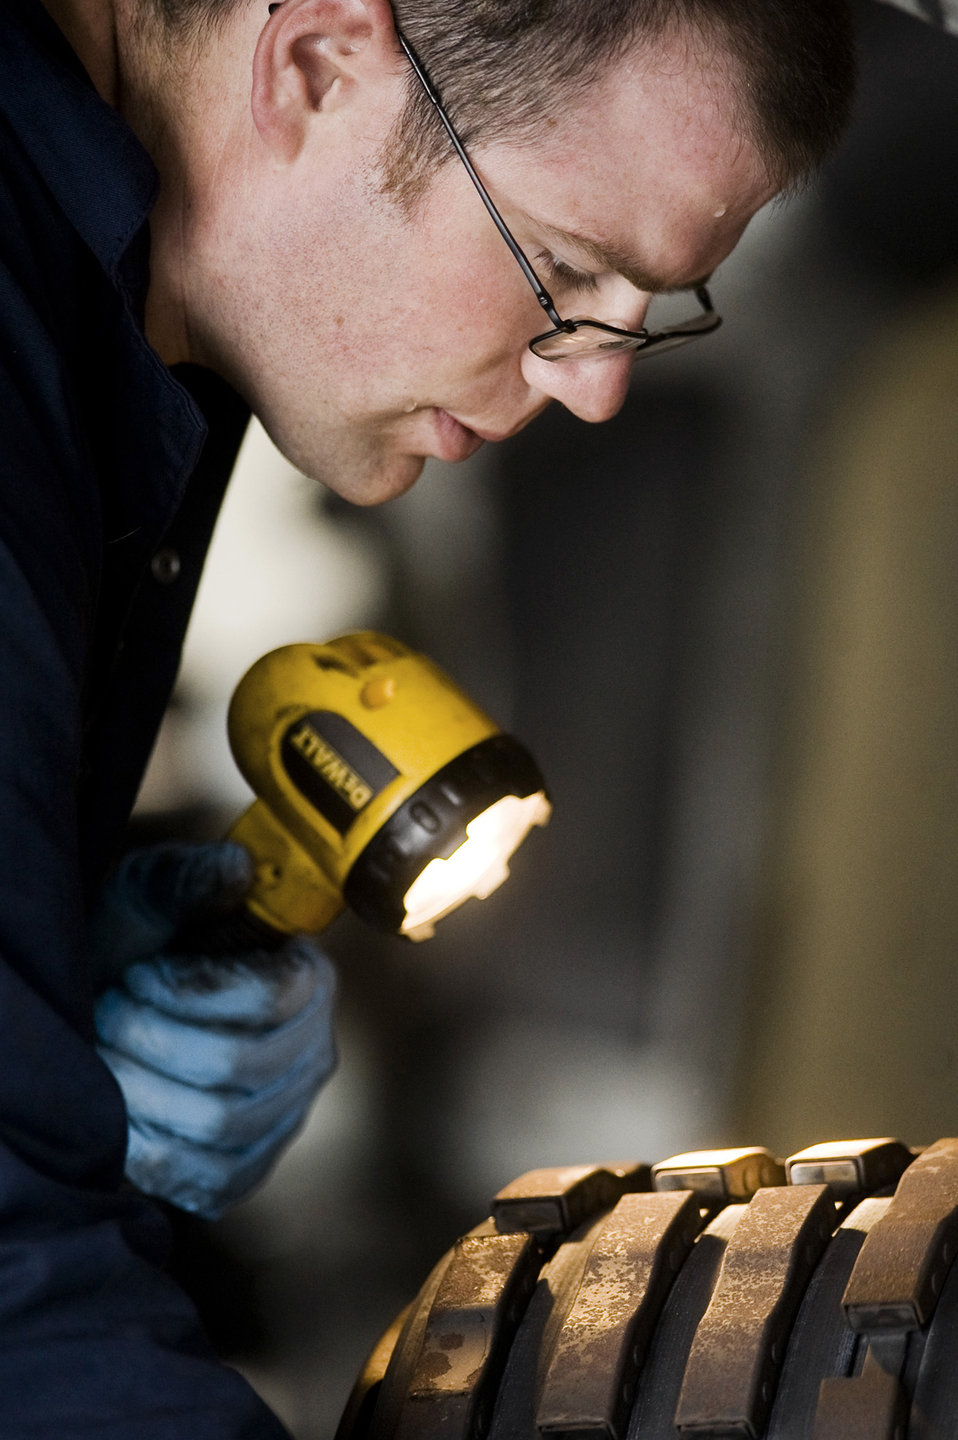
Maintenance Airmen keep C-17 wheels turning

Staff Sgt. Daniel McQuistio inspects a C-17 Globemaster III rotor for deficiencies while performing a brake inspection Aug. 5, 2010 at Joint Base Lewis-McChord, Wash. The maintainers are responsible for ensuring the tire and break systems of the C-17 meet specific guidelines to ensure the safe operation of the aircraft.